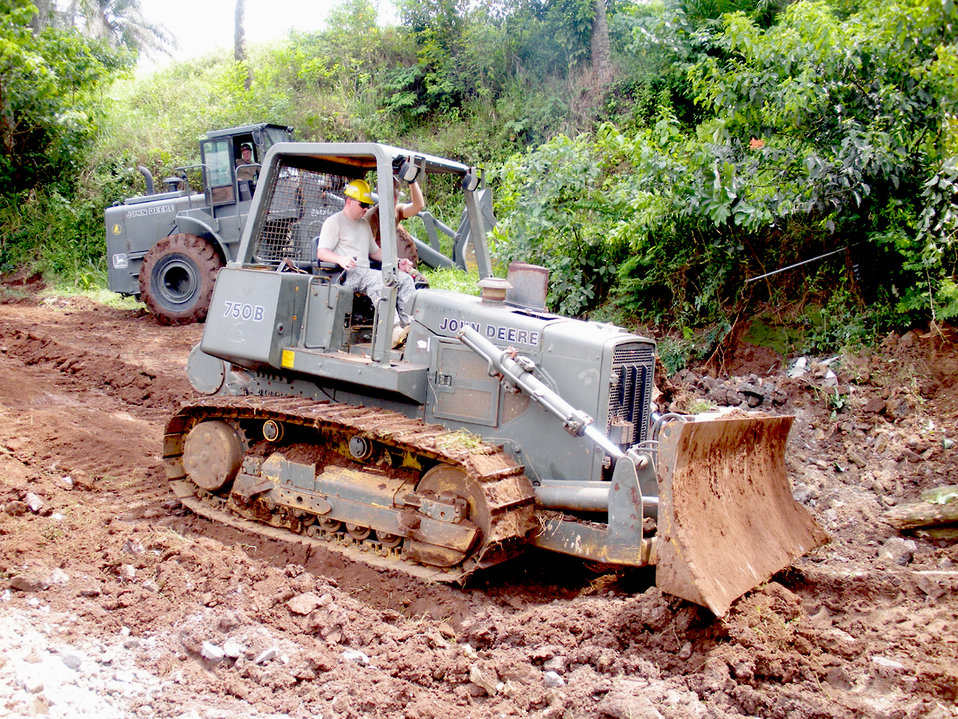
Airmen return from Africa Partnership Station 2009 support

Tech. Sgt. James Gregg drives a bulldozer during construction of a pier in support of African Partnership Station 2009 Sept. 29, 2009, in West Central Africa. African Partnership Station activities consist of multinational joint exercises, port visits, hands-on practical courses, professional training and community outreach with nations of Africa. Sergeant Gregg is a communication computer system operator with the 21st Air Mobility Operations Squadron.